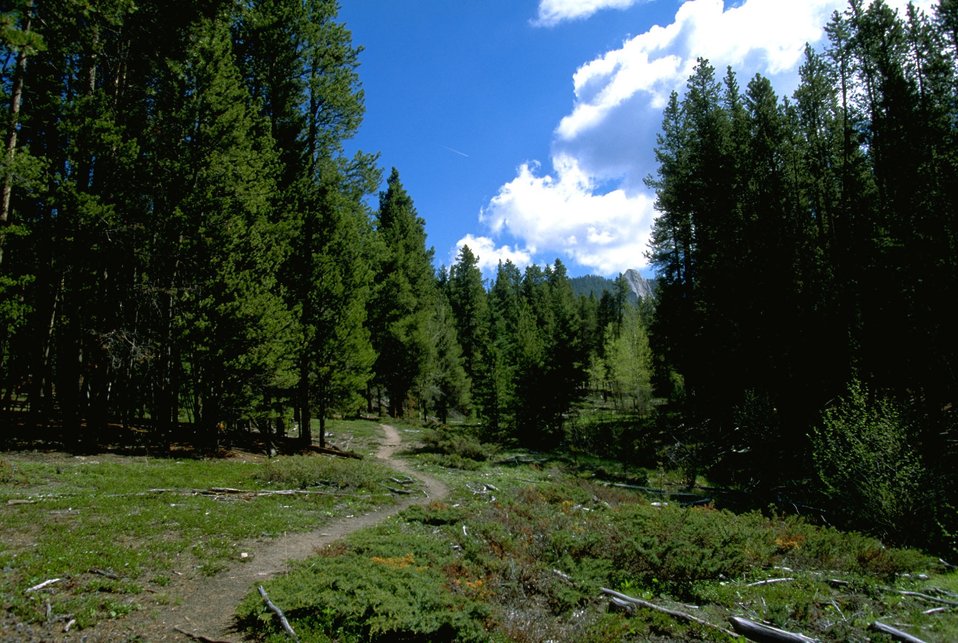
Trail in the Humbug Spires Wilderness Study Area